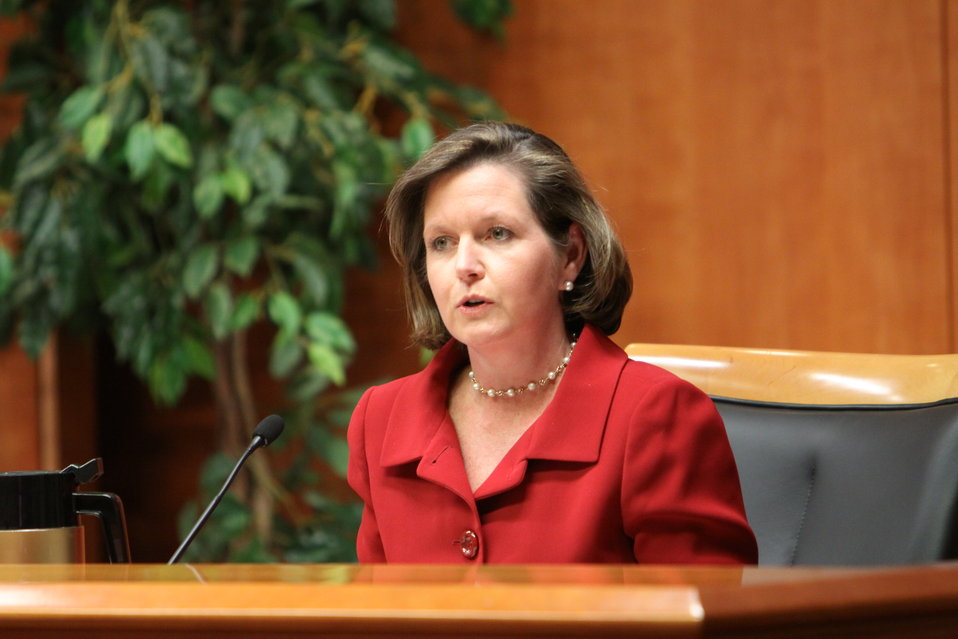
Commissioner Meredith Attwell Baker